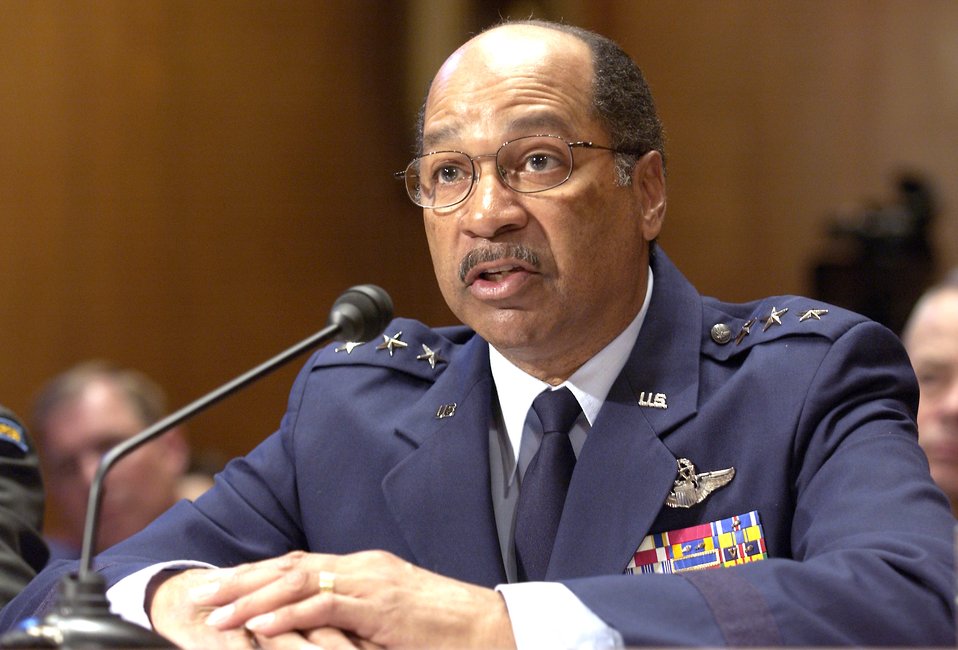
Guard, Reserve leaders testify on Capitol Hill

WASHINGTON -- Lt. Gen. Daniel James III, Air National Guard director, answers questions during a hearing of the Senate Appropriations Committee Defense Subcommittee on April 20. The subcommittee heard testimony to examine proposed budget estimates for the Air National Guard and Air Force Reserve fiscal 2006 budget.